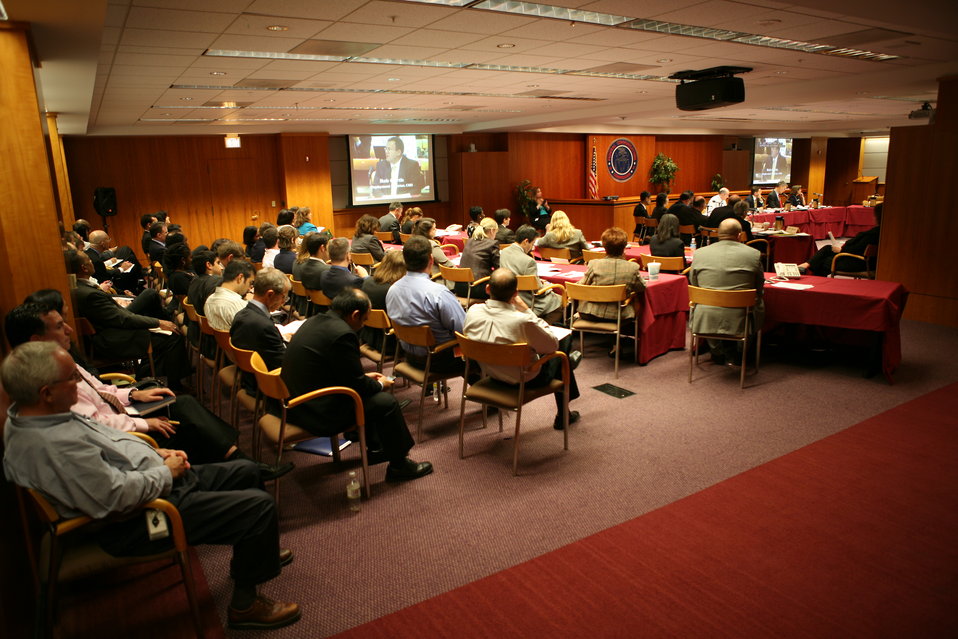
Midterm Review2

Broadband Midterm Review, 9-29-09